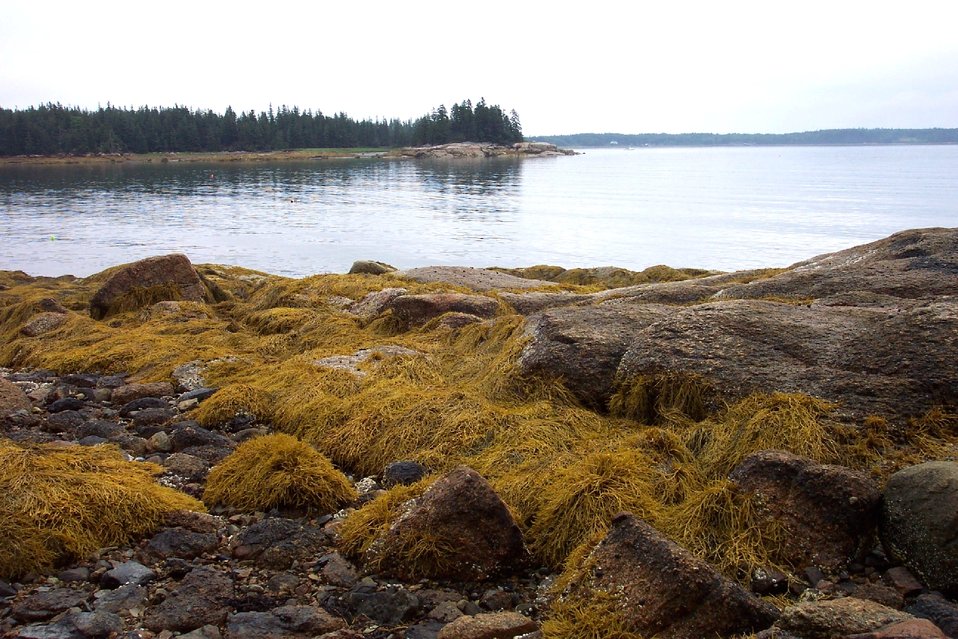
Kelp-covered granite at low tide.